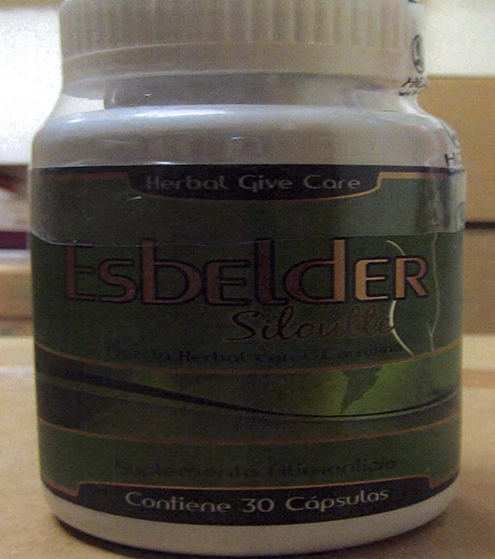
RECALLED – Dietary Supplement

August 16, 2013 – Product Recall – Herbal Give Care LLC Issues Voluntary Nationwide Recall of Esbelder Man Capsules, Esbelder Fem Capsules, and Esbelder Siloutte Capsules Vitamin Supplements Due to Potential Health Risks.